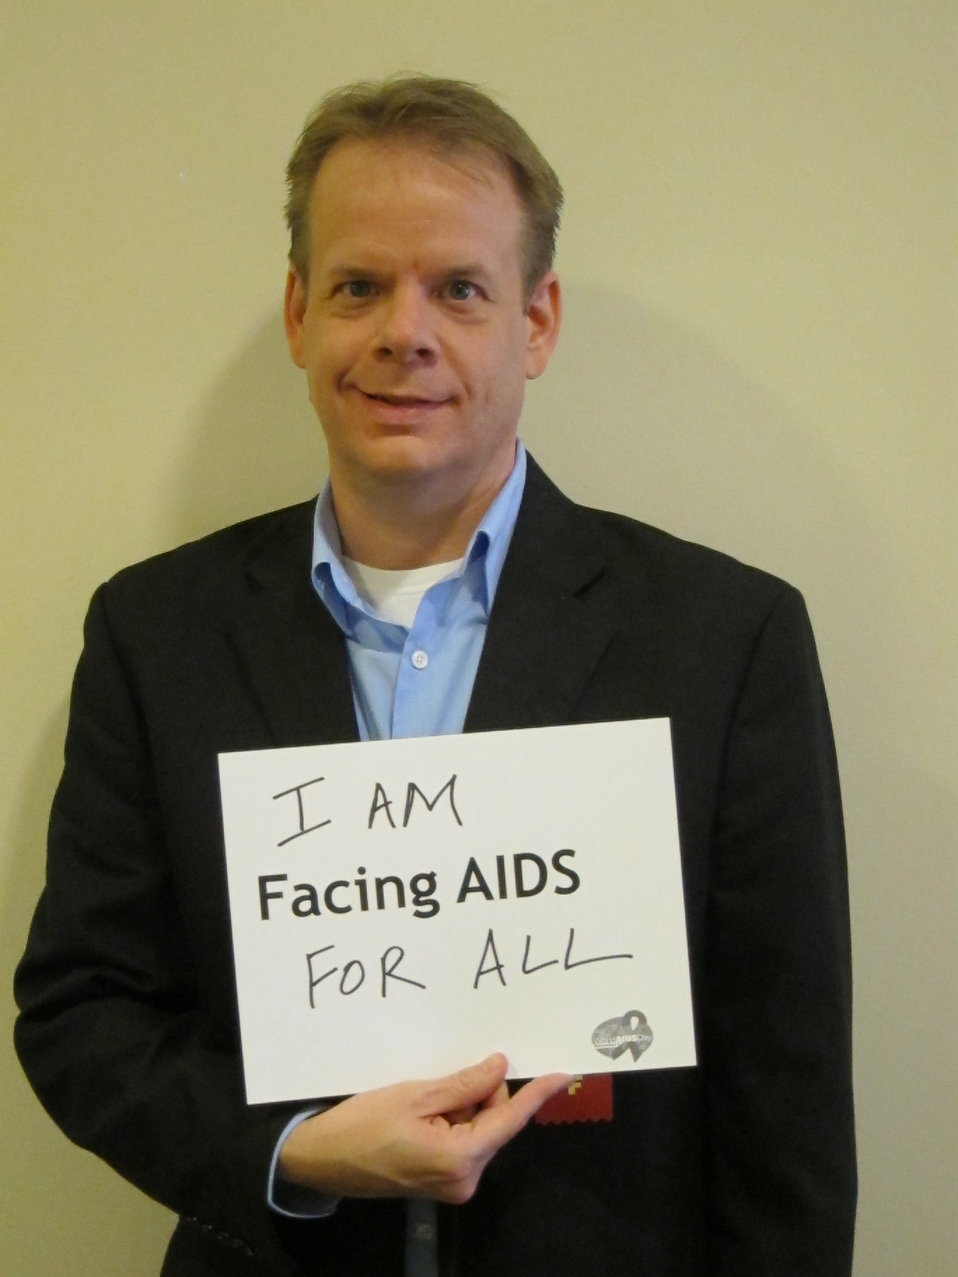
I am FACING AIDS for all.